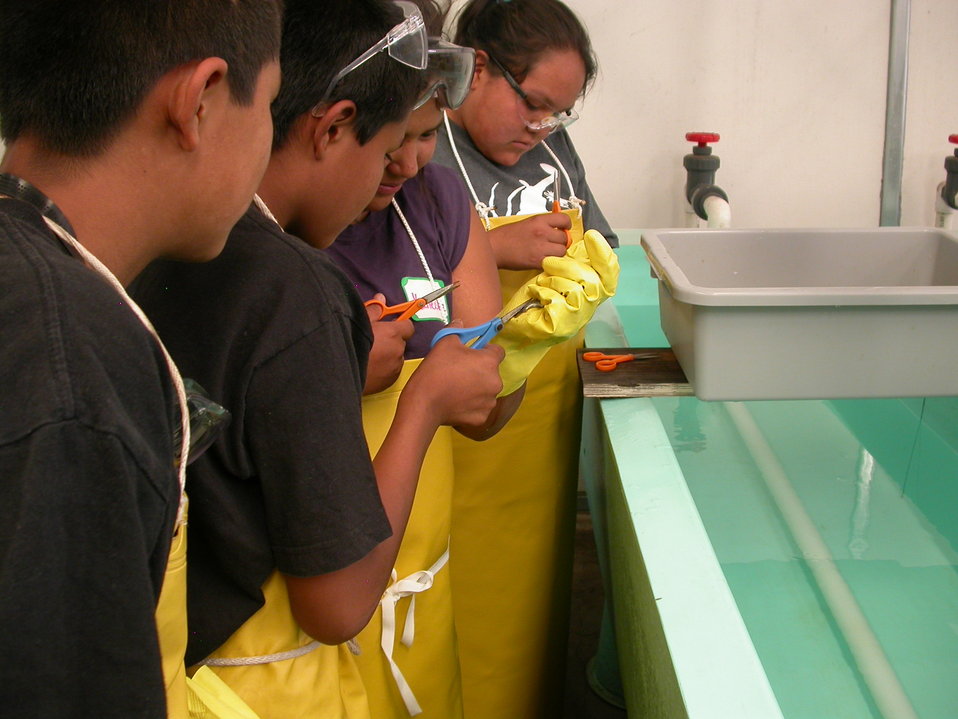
Alchesay-Williams Natl Fish Hatchery Complex, AZ